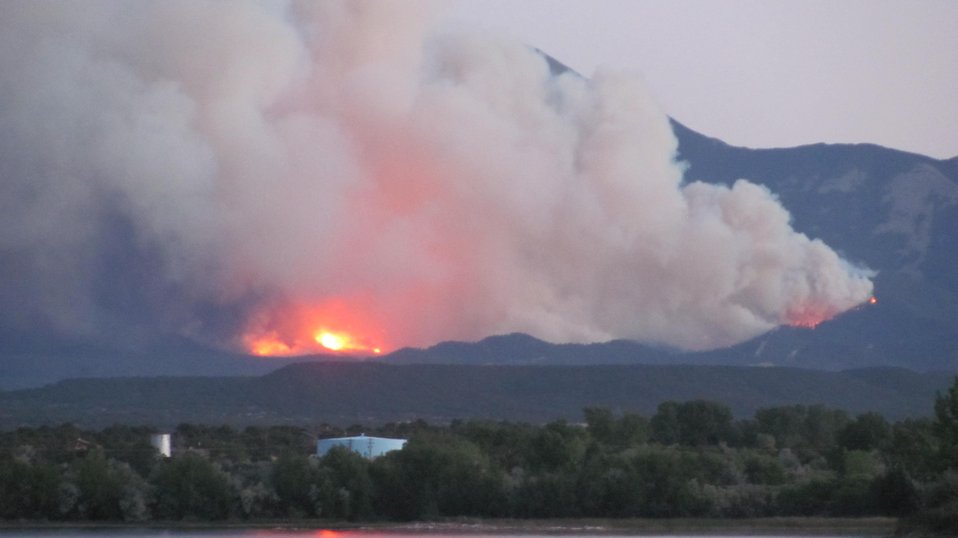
The East Peak Fire located approximately 10 miles southwest of Walsenburg, CO began on Jun. 19, 2013 by lightning has consumed approximately 12, 996 acres. U.S. Forest Service by Don Degman.